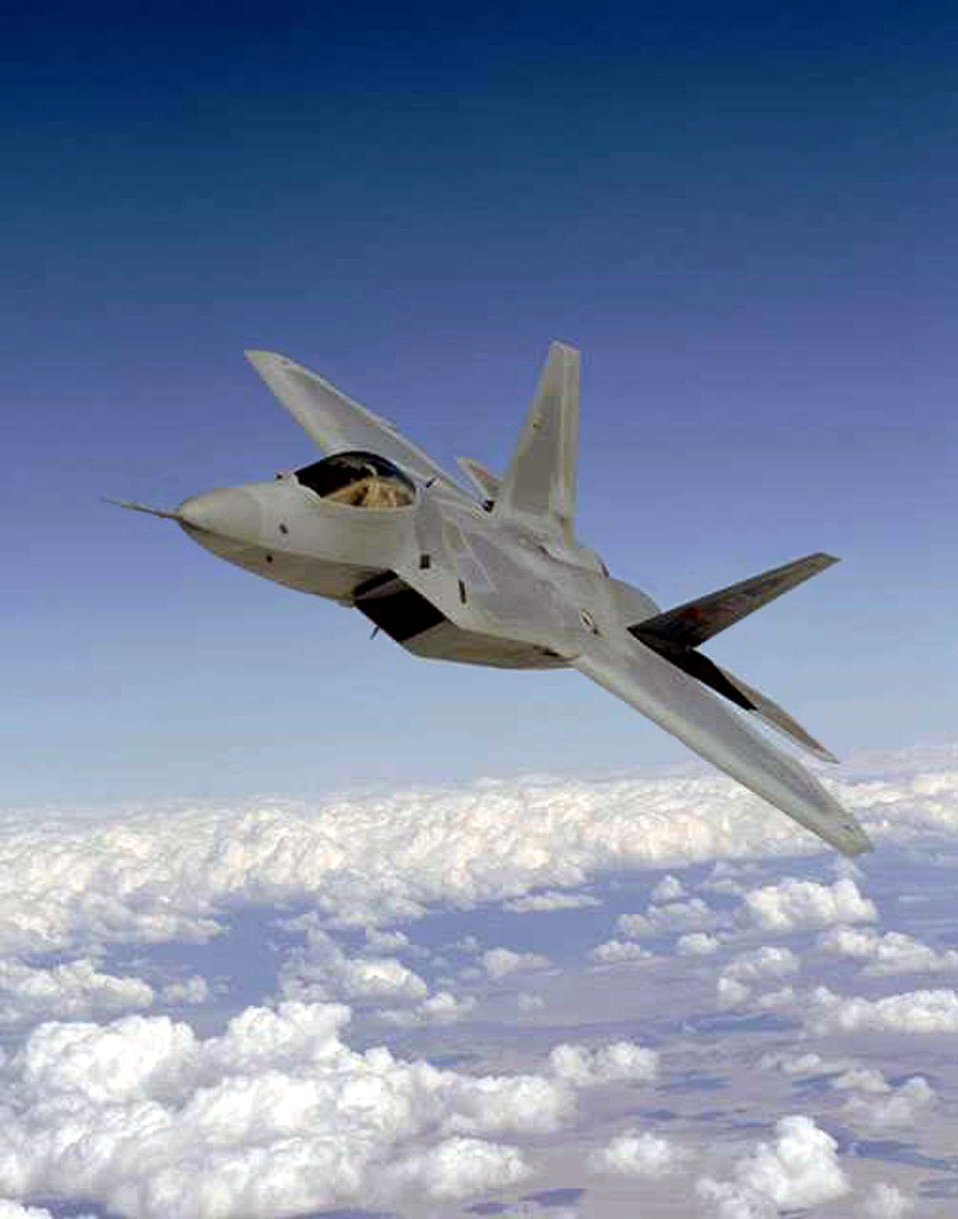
Raptor

EDWARDS AIR FORCE BASE, Calif. -- F/A-22 Raptor test and training flight operations resumed here after a brief delay following a nose-gear-retraction incident.